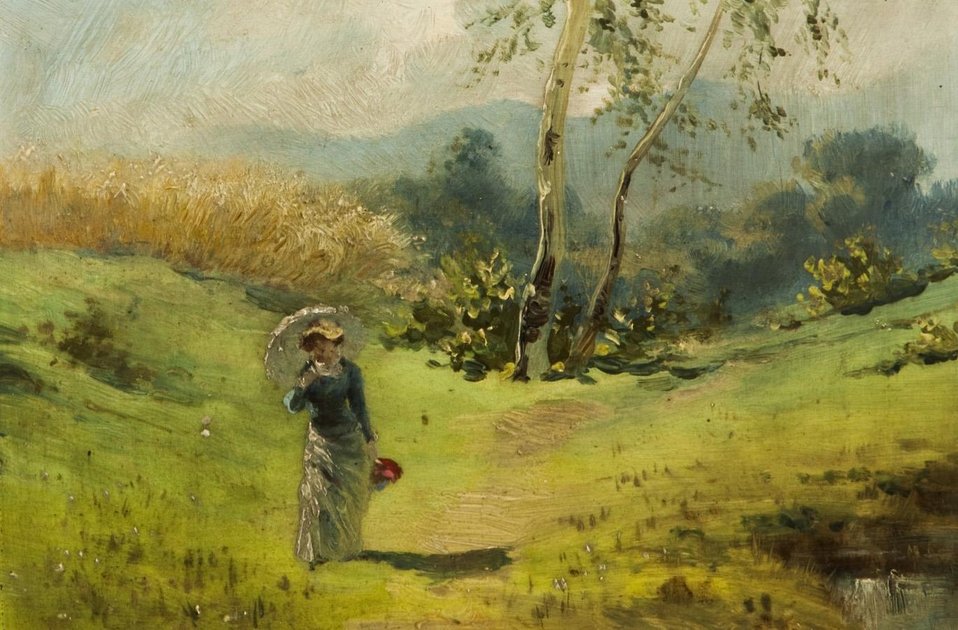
Adolf Liebscher Dame mit Sonnenschirm 1884